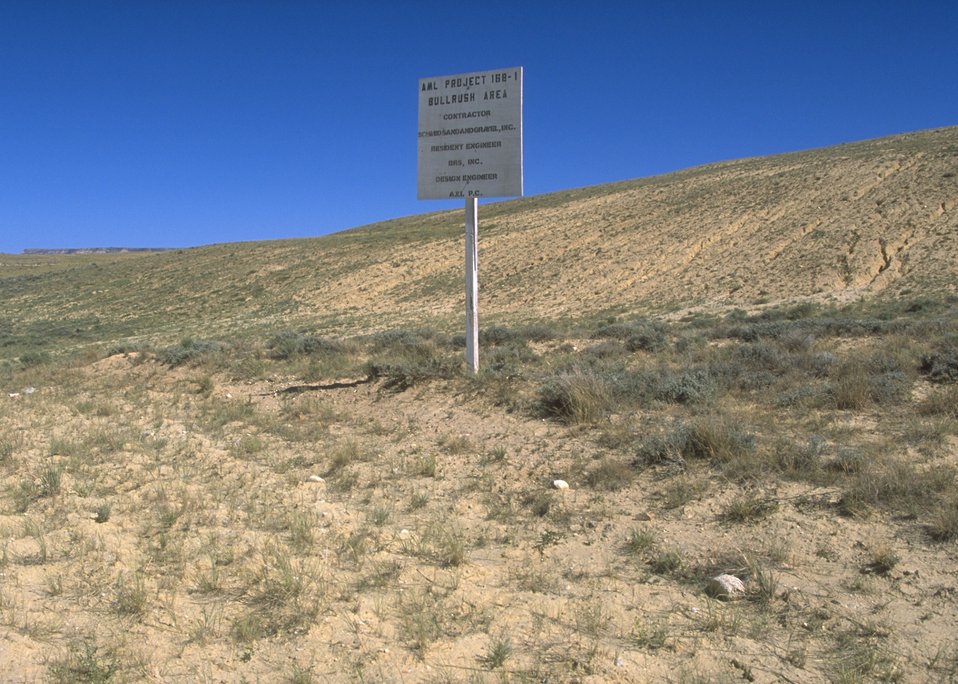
Gas Hill Abandoned Mine Lands in various stages of rehabilitation, Lander Field Office.